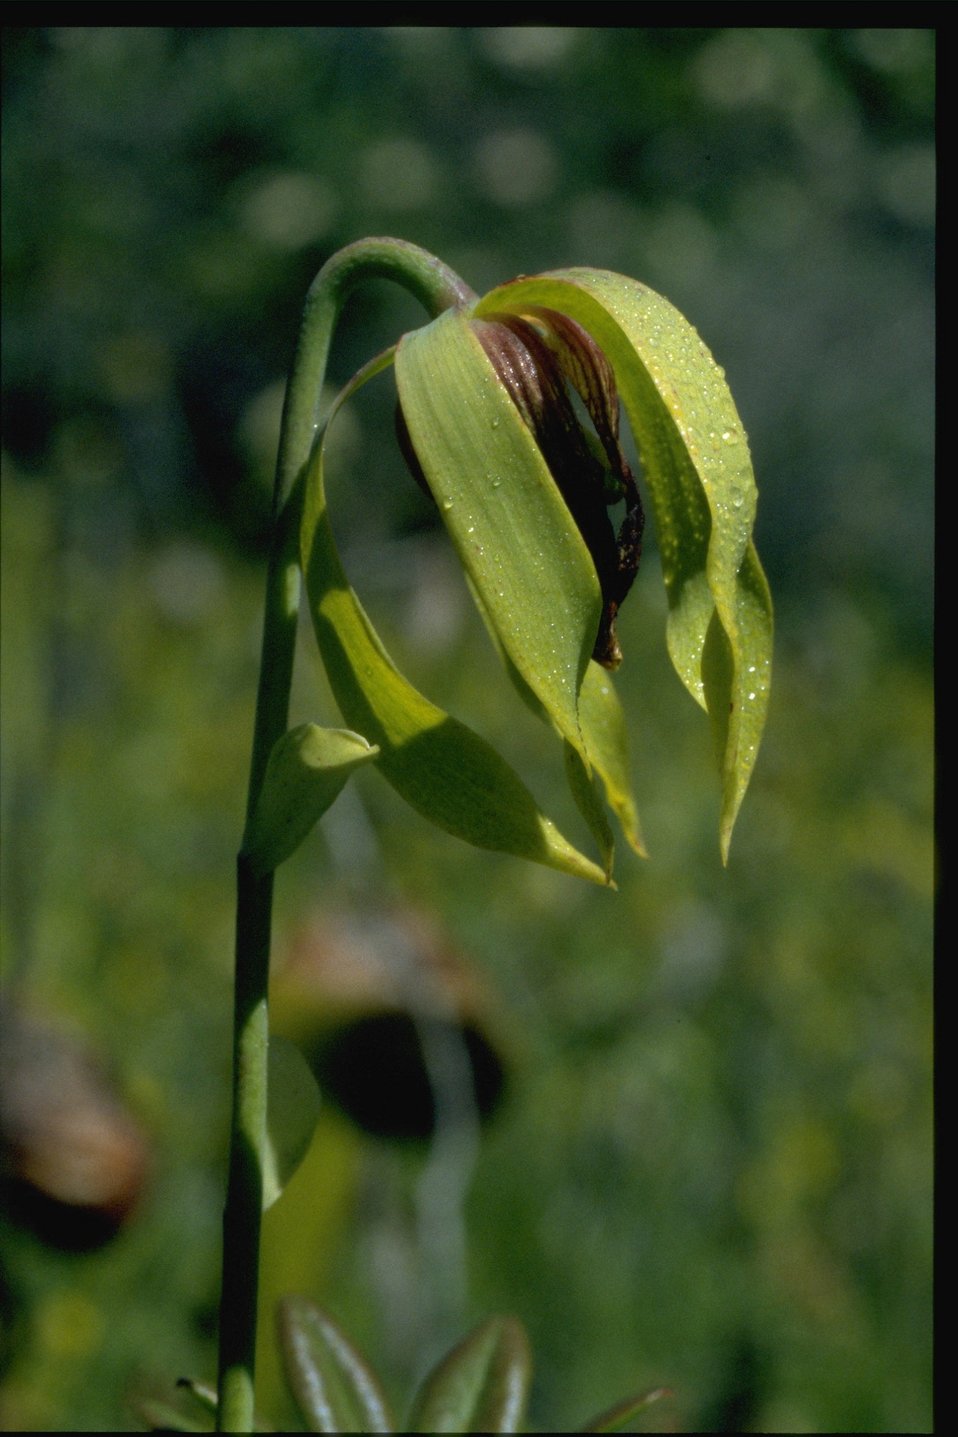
Closeup shot of Cobra Lily, Darlingtonia californica.